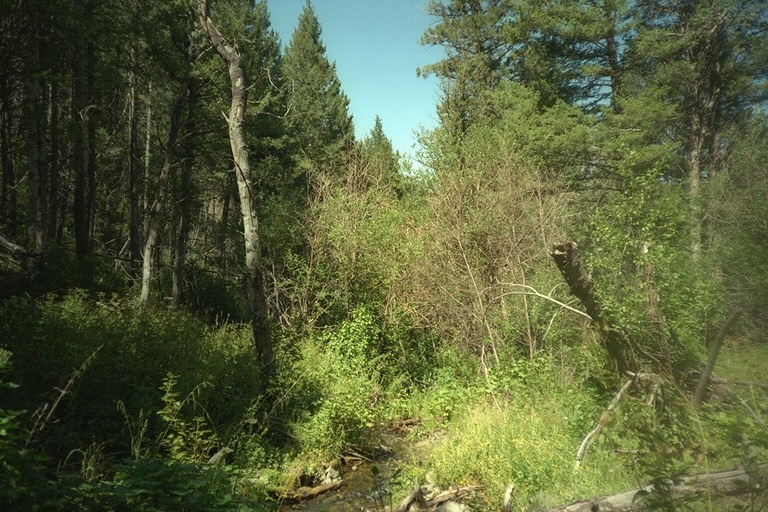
Riparian area Public Lands Salmon Field Office UCSC Upper Columbia Salmon Clearwater District